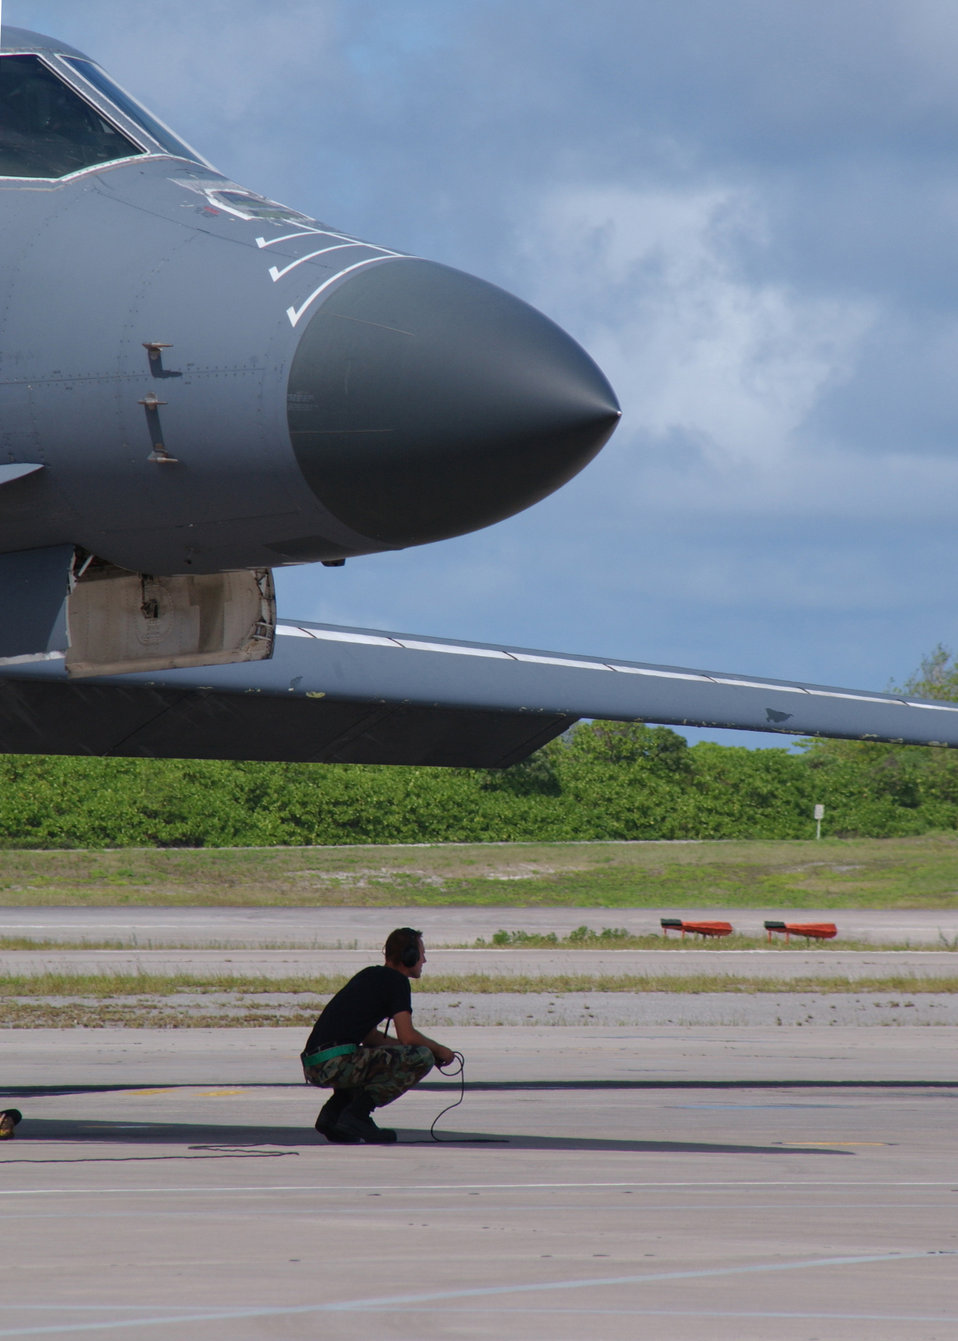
Wait to Launch

OPERATION IRAQI FREEDOM -- Airman 1st Class Patrick Manning, a B-1B Lancer crew chief with the 40th Expeditionary Group, waits as a B-1 readies for launch at a forward-deployed location Oct. 13.